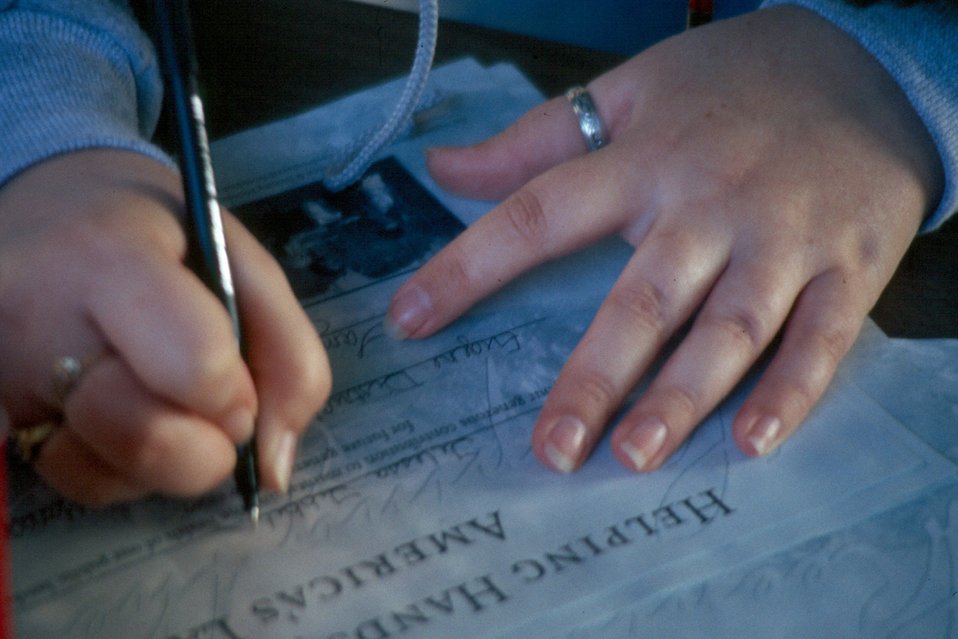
Filling out volunteer achievement awards